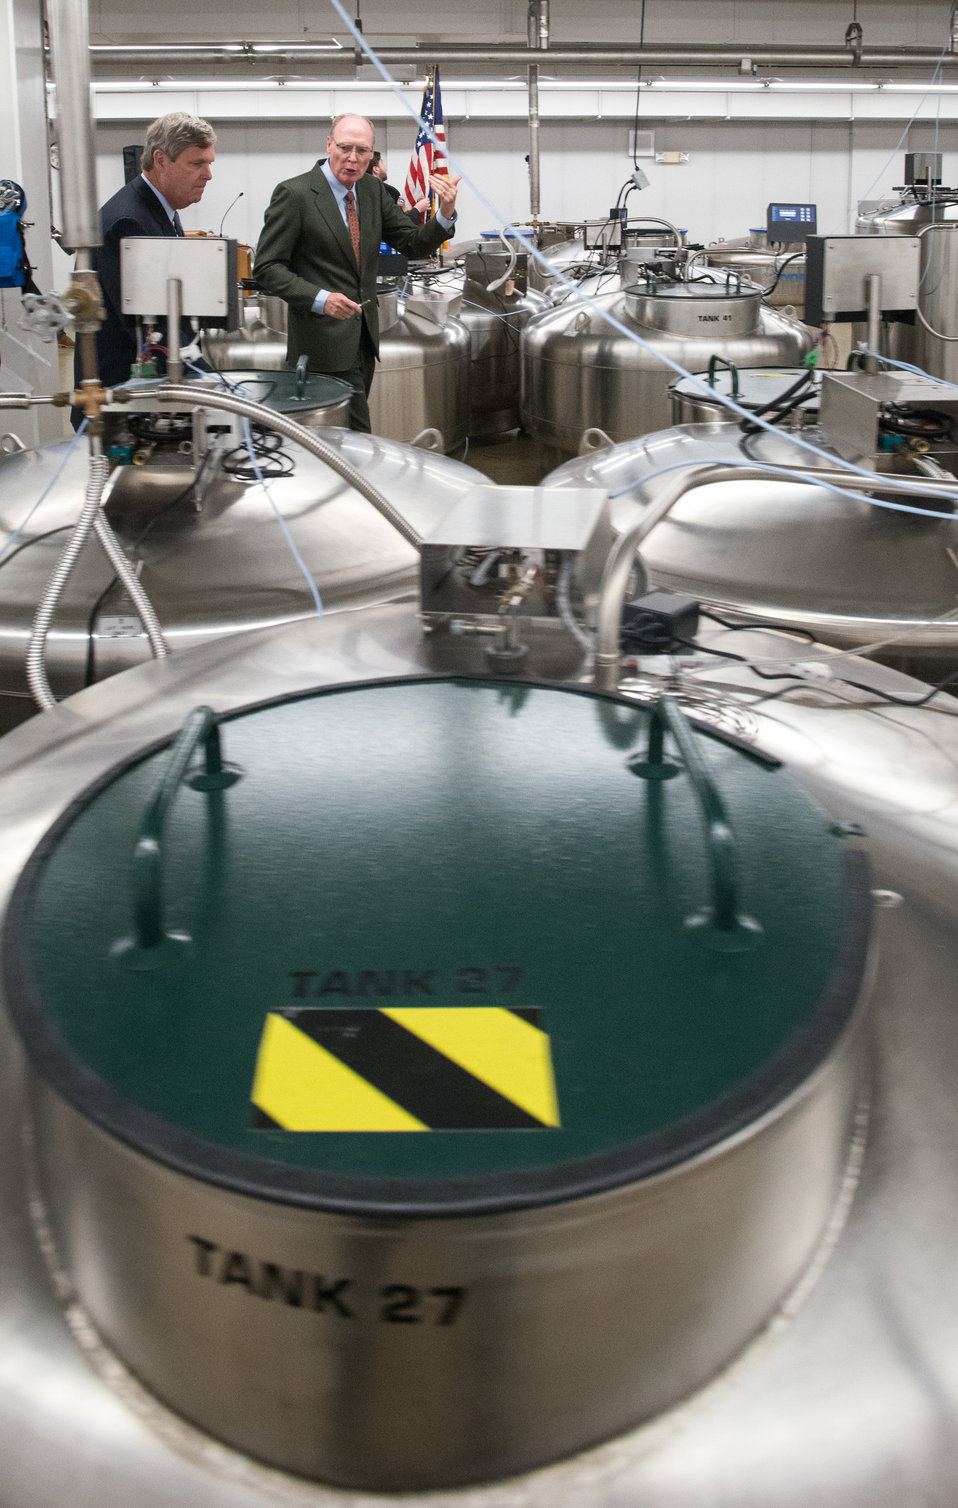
Agriculture Secretary Tom Vilsack tours the Cryogenic Storage Vault at the U.S. Department of Agriculture's (USDA) Agriculture Research Service (ARS) National Center for Genetic Resources Preservation (NCGRP) in Ft. Collins, CO on Wednesday, Nov. 6, 2013. The vault stores 45-50 cryogenic tanks of animal germplasm, plant tissue culture, and seeds that are stored at -196 °C (-321 °F) in liquid storage or to -193 °C (-315 °F) in vapor storage. NCGRP is the largest agricultural gene bank facility in the U.S. The NCGRP staff conducts groundbreaking research to develop more efficient and effective means for preserving plant and animal germplasm, and for better understanding the genetic structure of these invaluable materials. The research findings, preservation techniques, and specialized technology developed by the NCGRP have been adopted by gene banks around the world: many international scientists travel to the NCGRP for research and training.